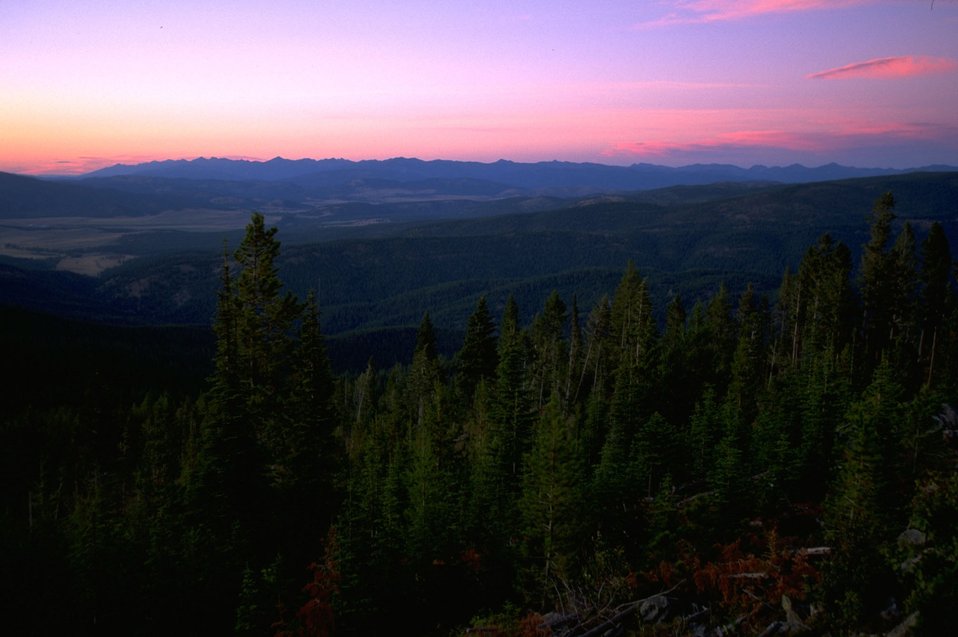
Garnet Back Country Byway--sunrise view from overlook